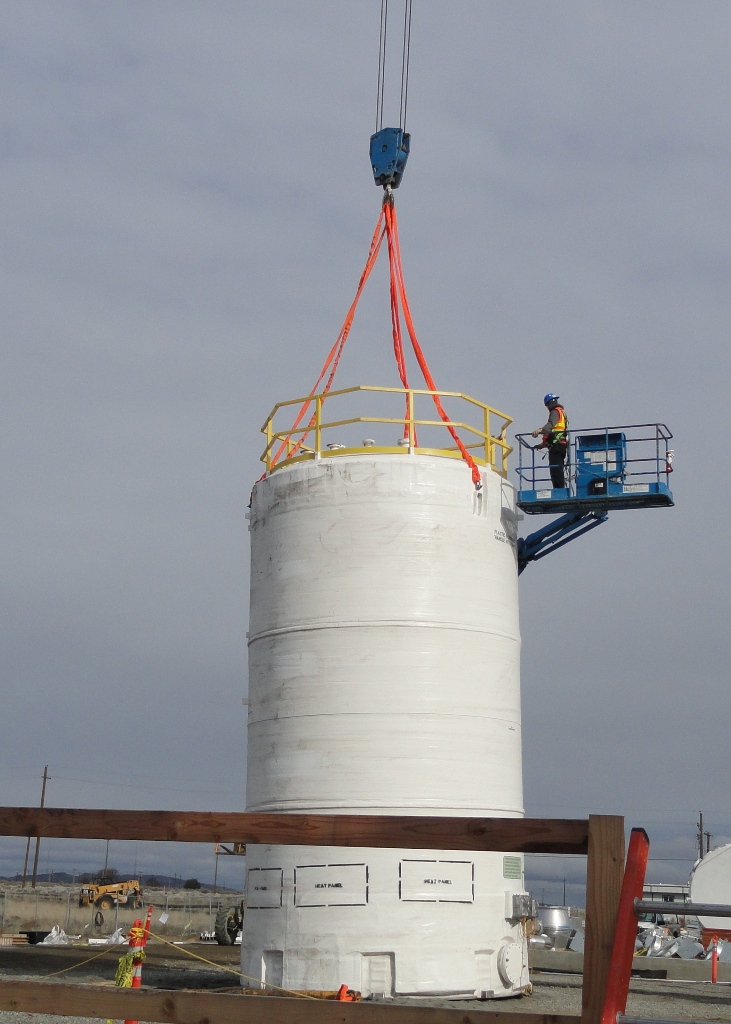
Recovery Act Supports Construction of Site’s Largest Groundwater Treatment Facility

Recovery Act workers in various stages of construction of what will be the largest groundwater treatment facility at the Hanford Site.